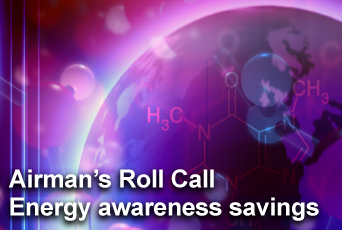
Airmen's Roll Call highlights energy awareness

This week's Airman's Roll Call highlights energy awareness and energy challenges that confront the Air Force.